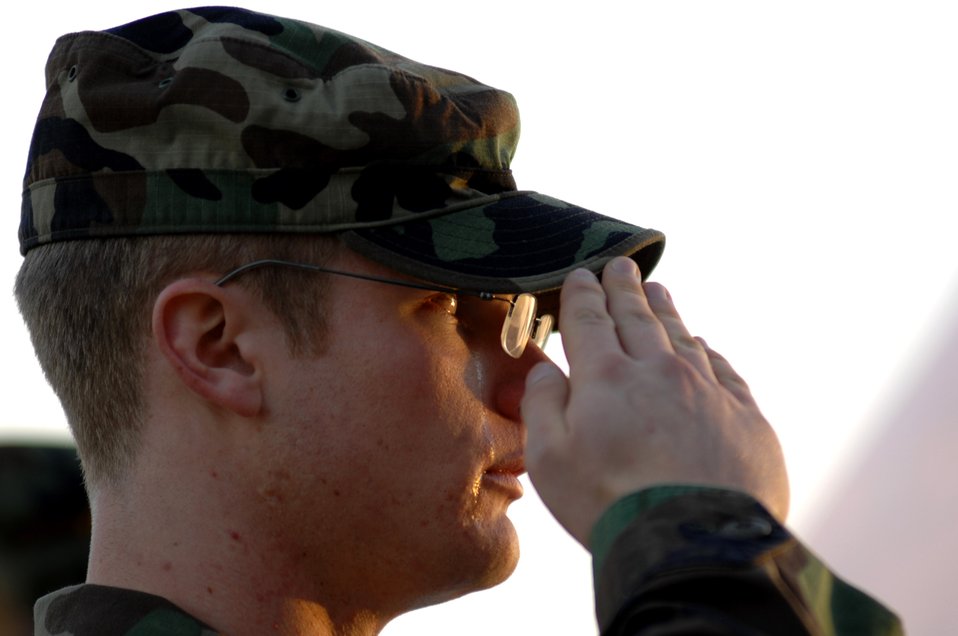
Fallen Airmen, Soldiers honored at Aviano

An Airman from the 31st Fighter Wing salutes during a repatriation ceremony Nov. 13 at Aviano Air Base, Italy, for six servicemembers who were killed when an Army UH-60 Black Hawk helicopter attached to the 1st Battalion, 214th Aviation Regiment crashed Nov. 8, 22 miles southwest of Aviano, Italy.